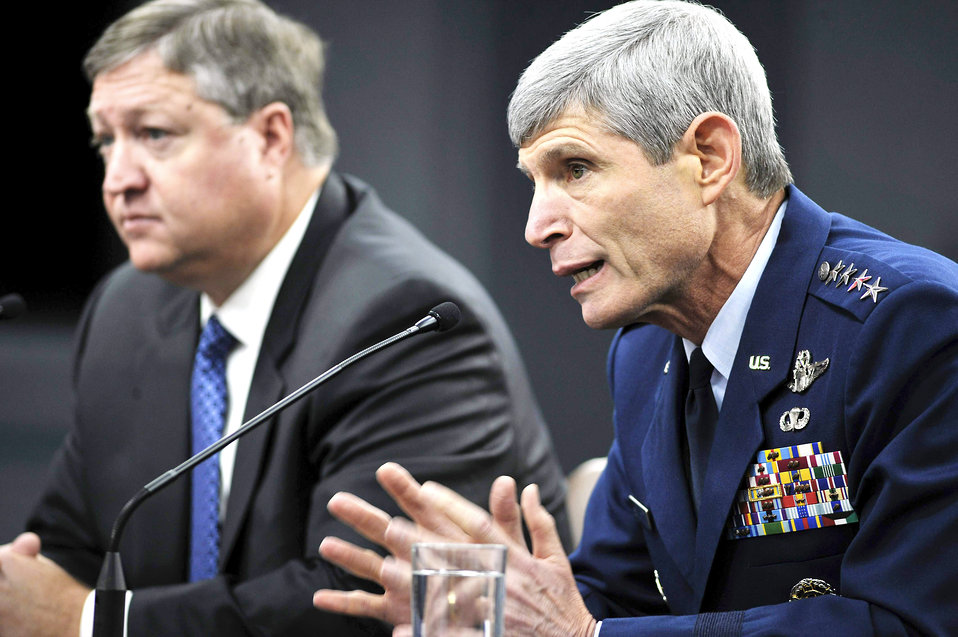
Global Strike Command will stress nuclear mission

Air Force Secretary Michael B. Donley (left) and Air Force Chief of Staff Gen. Norton Schwartz answer questions at an Aug. 5 Pentagon news conference on the Air Force Global Strike Command activation. The new command, with headquarters at Barksdale Air Force Base, La., stands up Aug. 7.